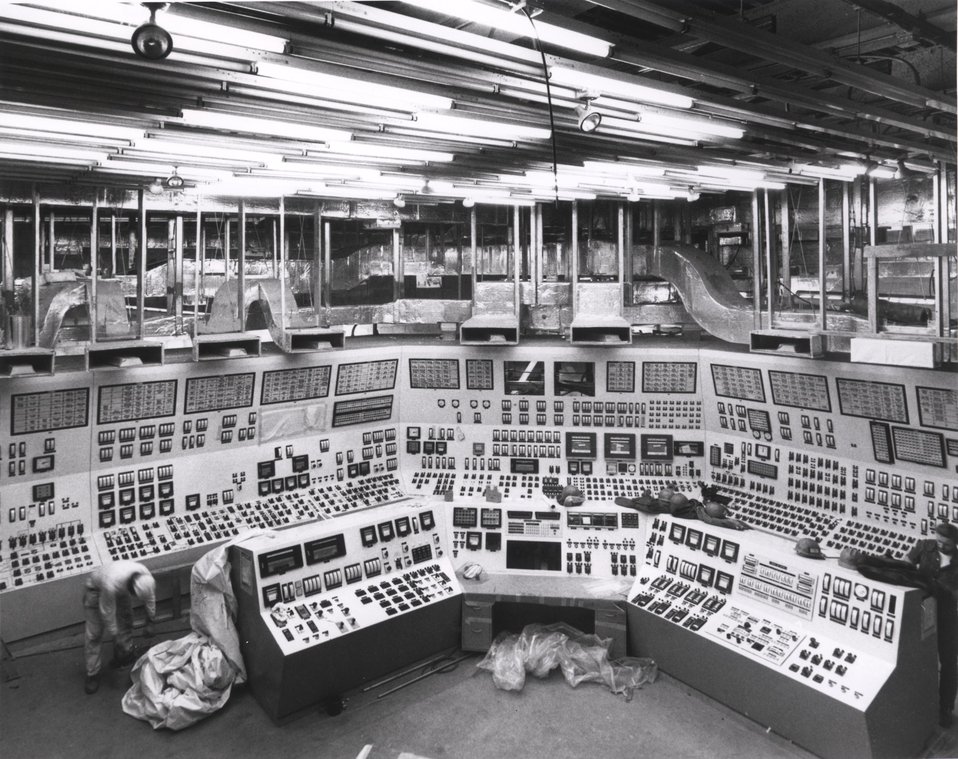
A view of construction activities in the control room at Portland General Electric's Trojan Nuclear Power Plant on the Columbia River near Prescott, Oregon. Circa 1974.